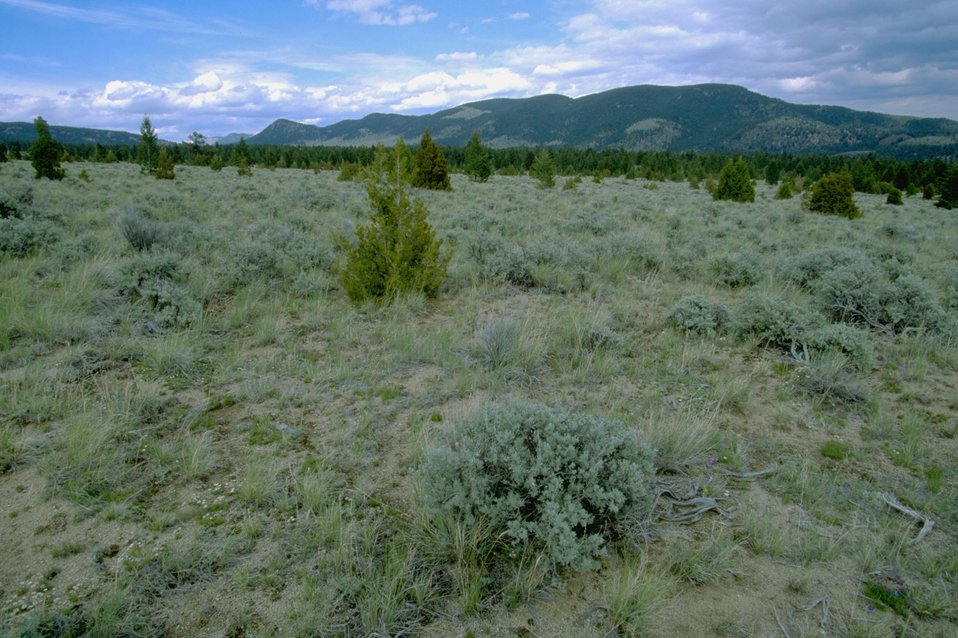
Sagebrush and vegetation with Hills in the background